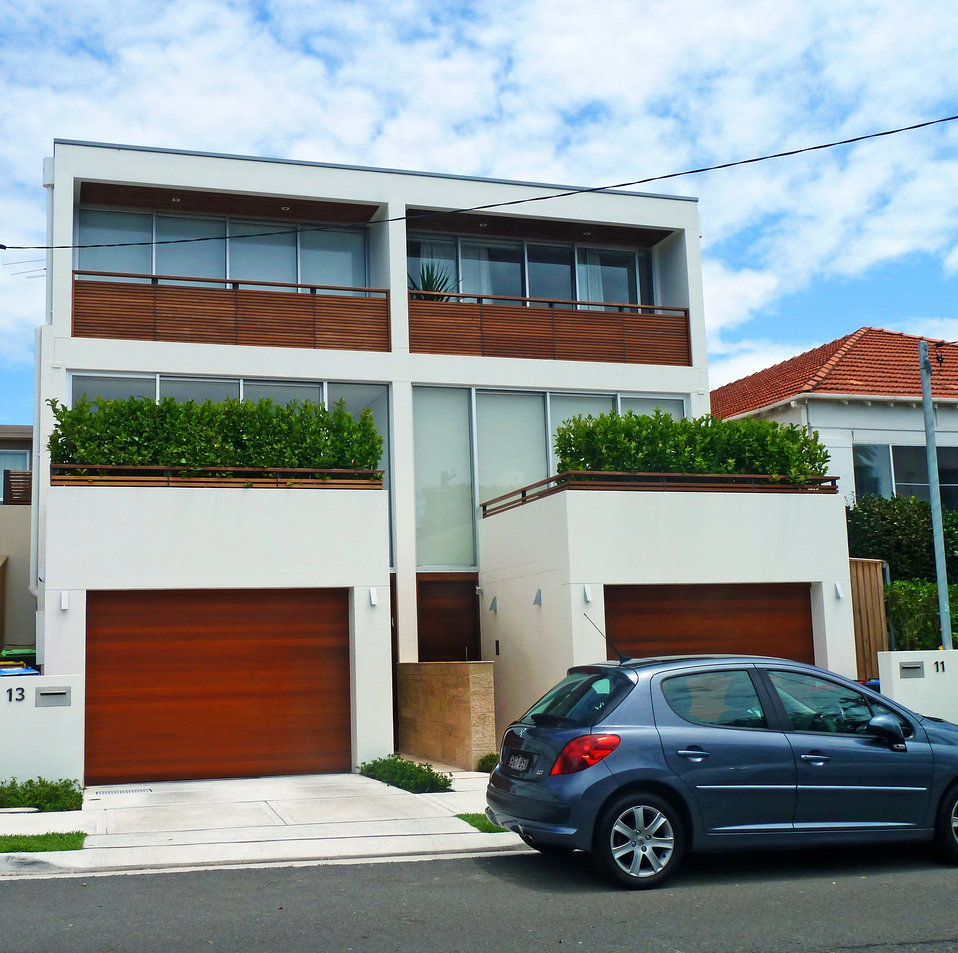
11–13 Elvina Street, Dover Heights, New South Wales, Australia.